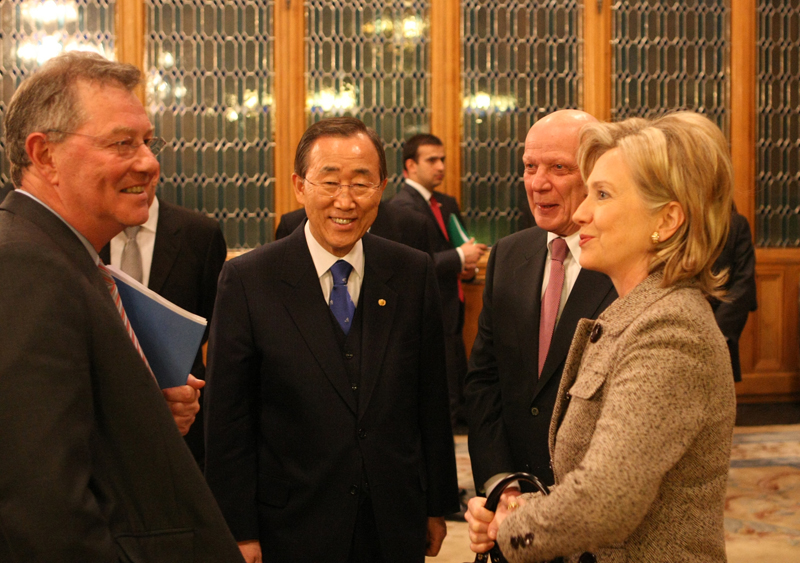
Secretary Clinton Speaks With UN Secretary-General Ban

U.S. Secretary of State Hillary Rodham Clinton speaks with U.N. Secretary-General Ban Ki-moon among others after the Quartet dinner in Moscow at the Osobnyak of the Ministry of Foreign Affairs, Moscow, Russia March 18, 2010.